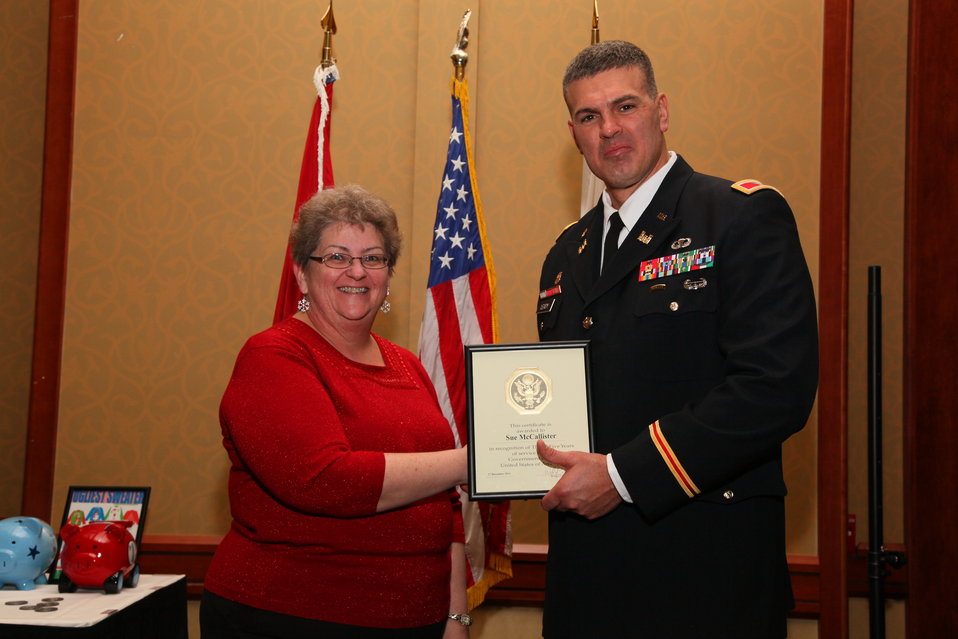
Sacramento District Holiday Party 2011